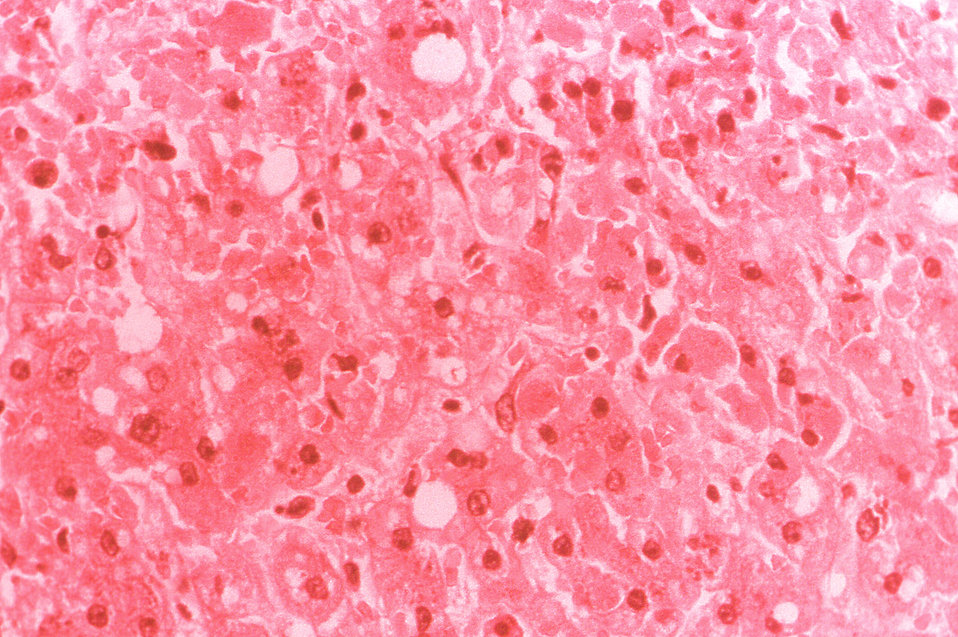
Under a magnification of 250X, this hematoxylin-eosin-stained (H&E) photomicrograph depicts the cytoarchitectural changes found in a liver tissue specimen extracted from a Rift Valley fever patient. This particular slide reveals the presence of 'acidophilic necrosis, which was leading to the formation of amorphous eosinophilic masses resembling Councilman bodies.'